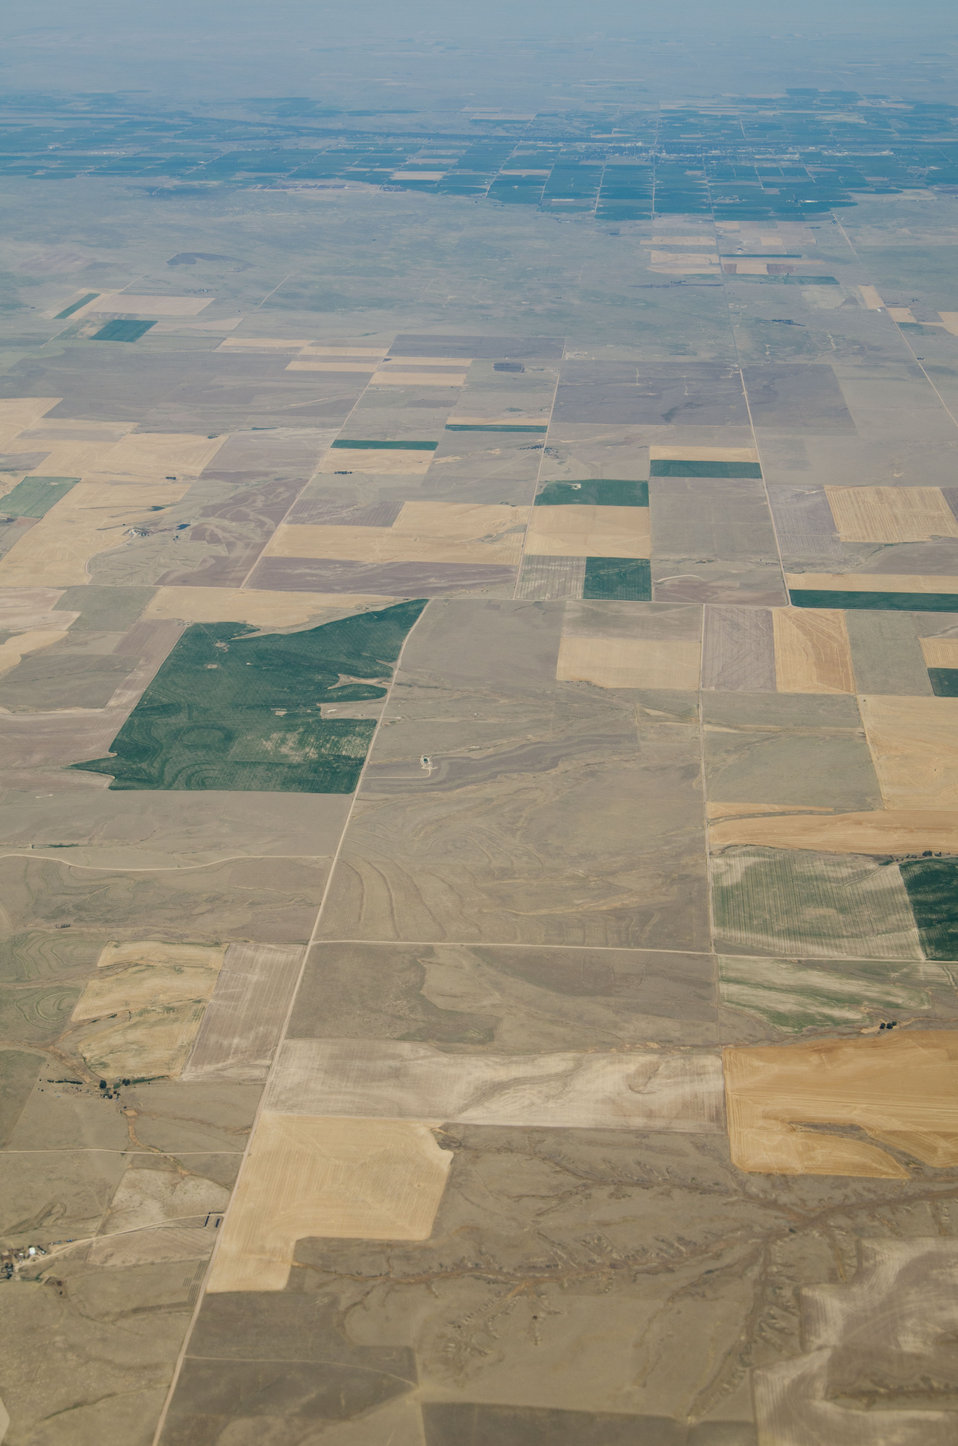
Aerial views of drought affected Colorado farm lands, 107 miles east of Denver, Colorado on Saturday, July 21, 2012. Green areas are irrigated, the yellow areas are dryland wheat crops.